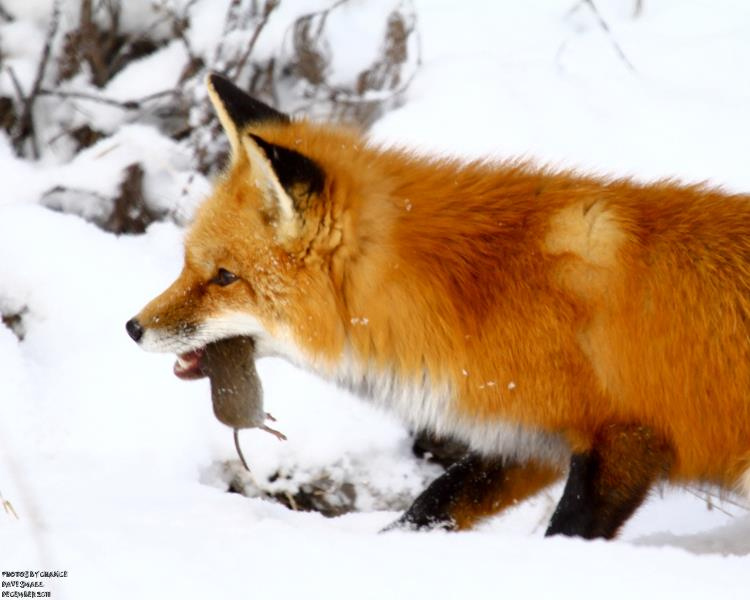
Red fox

At Sunkhase National Wildlife Refuge, ME.